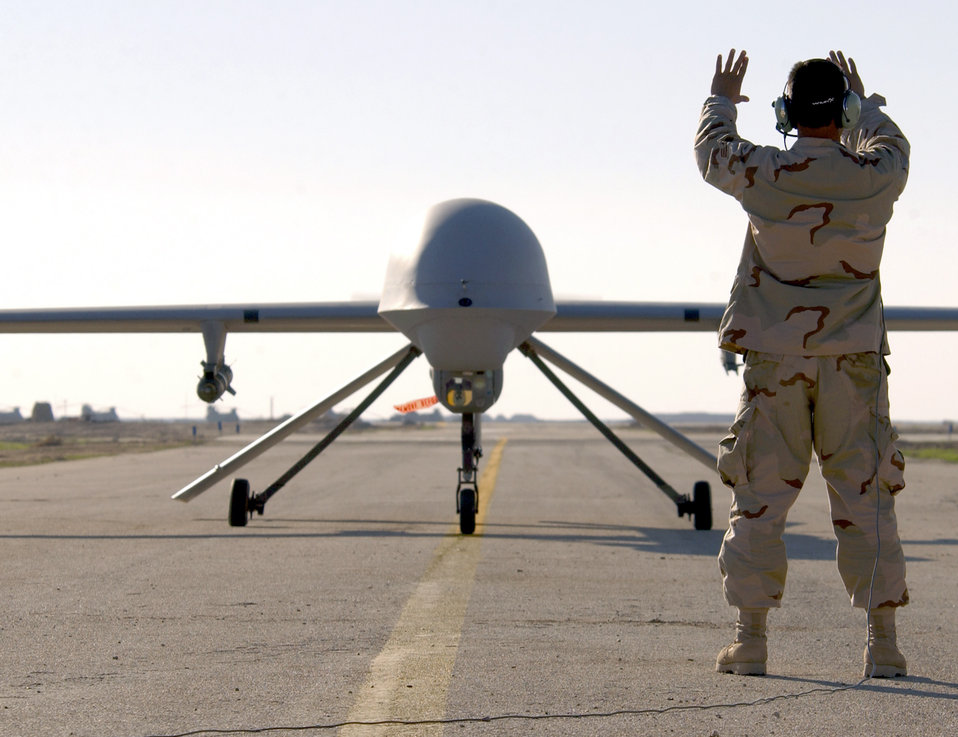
A Predator among us

TALLIL AIR BASE, Iraq -- Senior Airman Robert Mascorro marshals an RQ-1 Predator aircraft here Jan. 20. The Predator is a remotely piloted vehicle that provides real-time surveillance imagery supporting Operation Iraqi Freedom. Airman Mascorro is assigned to the 46th Expeditionary Reconnaissance Squadron.